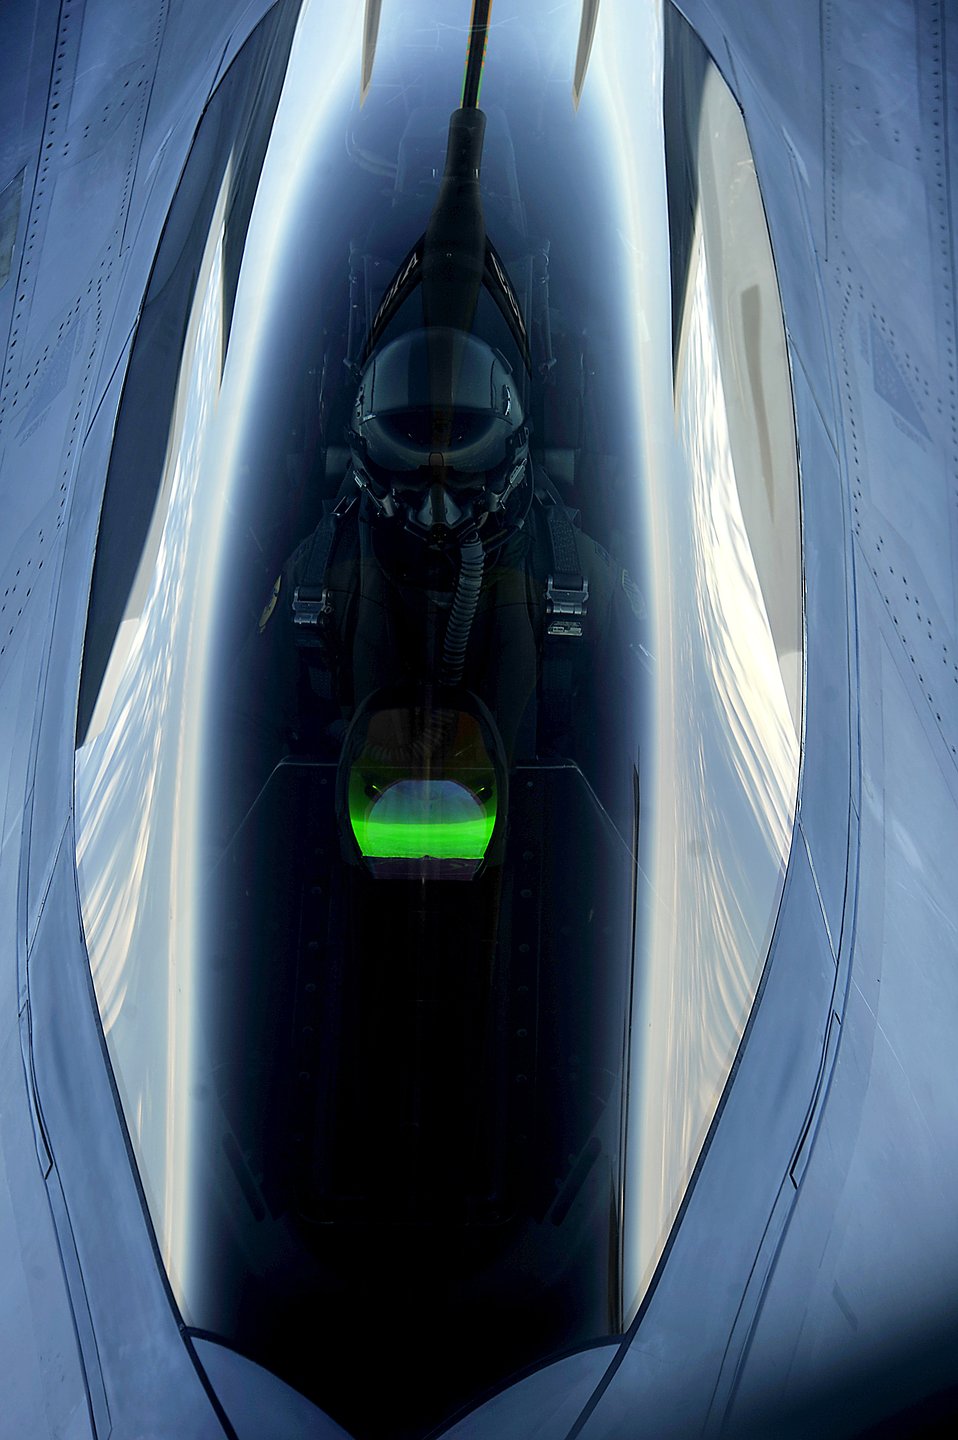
F-22 Raptor

A KC-135 Stratotanker with the 756th Air Refueling Squadron, Joint Base Andrews Naval Air Facility, Md. refuels a 1st Fighter Wing's F-22 Raptor from Joint Base Langley-Eustis, Va. off the east coast on May 10, 2012. The first Raptor assigned to the Wing arrived Jan. 7, 2005. This aircraft was allocated as a trainer, and was docked in a hanger for maintenance personnel to familiarize themselves with its complex systems. The second Raptor, designated for flying operations, arrived Jan. 18, 2005. On Dec. 15, 2005, Air Combat Command commander, along with the 1 FW commander, announced the 27th Fighter Squadron as fully operational capable to fly, fight and win with the F-22. (U.S. Air Force Photo by: Master Sgt. Jeremy Lock)